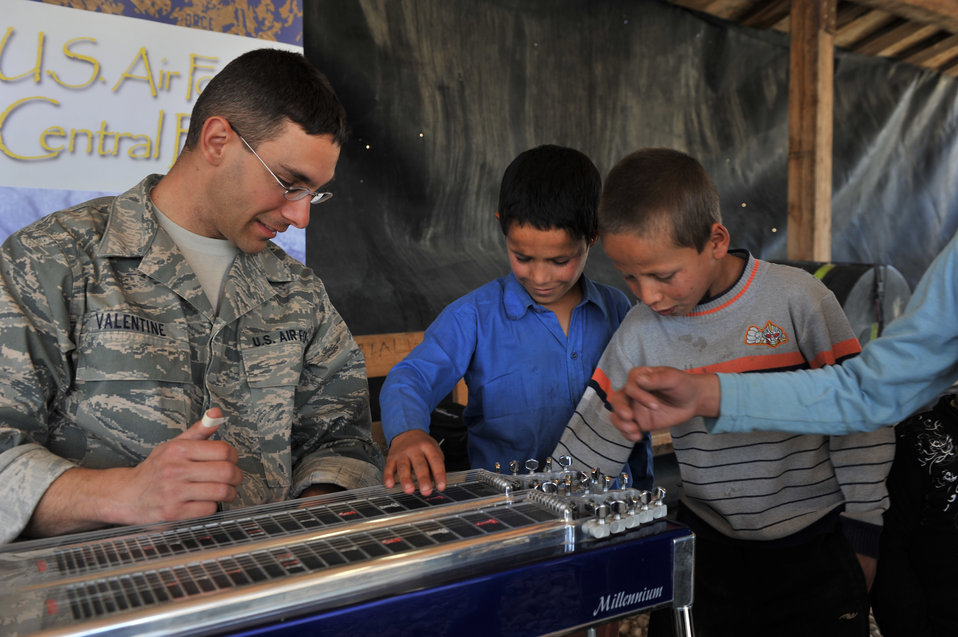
AFCENT band performs for Afghans

Tech. Sgt. Jeff Valentine, a U.S. Air Force Central Expeditionary Band steel guitarist and vocalist, allows Afghan children to play his instrument, April 20, 2011, at the Egyptian Field Hospital at Bagram Airfield, Afghanistan.